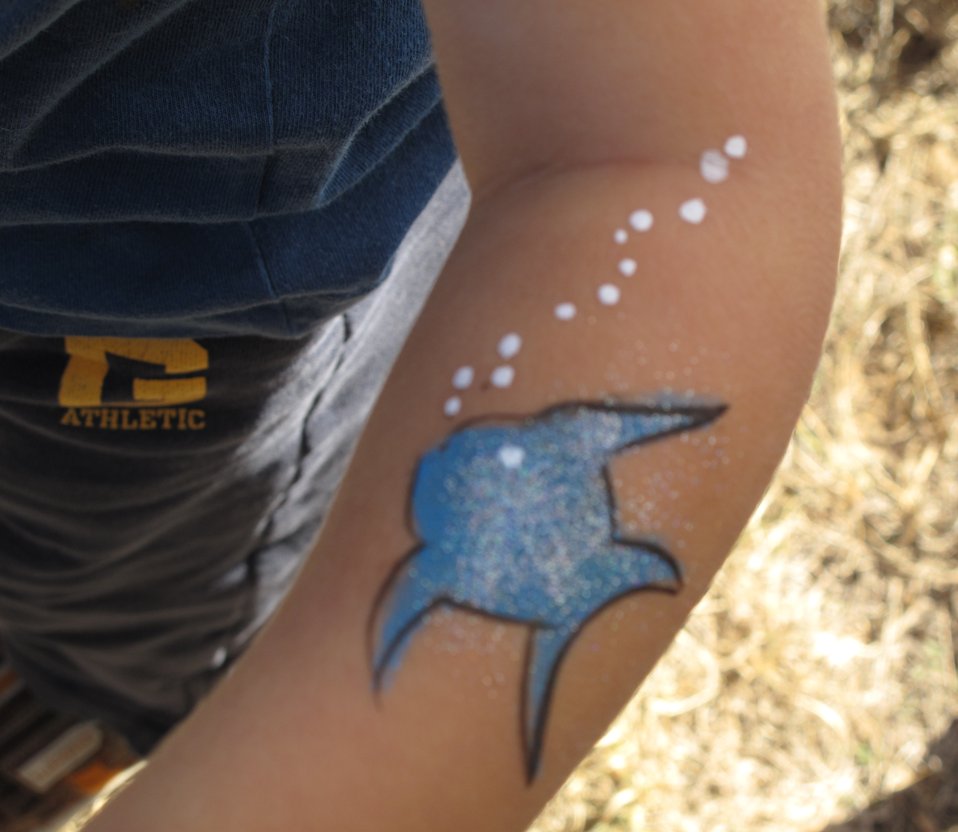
Refuge Round-up 2010

Fish painting on a young child at the Refuge Round-Up.